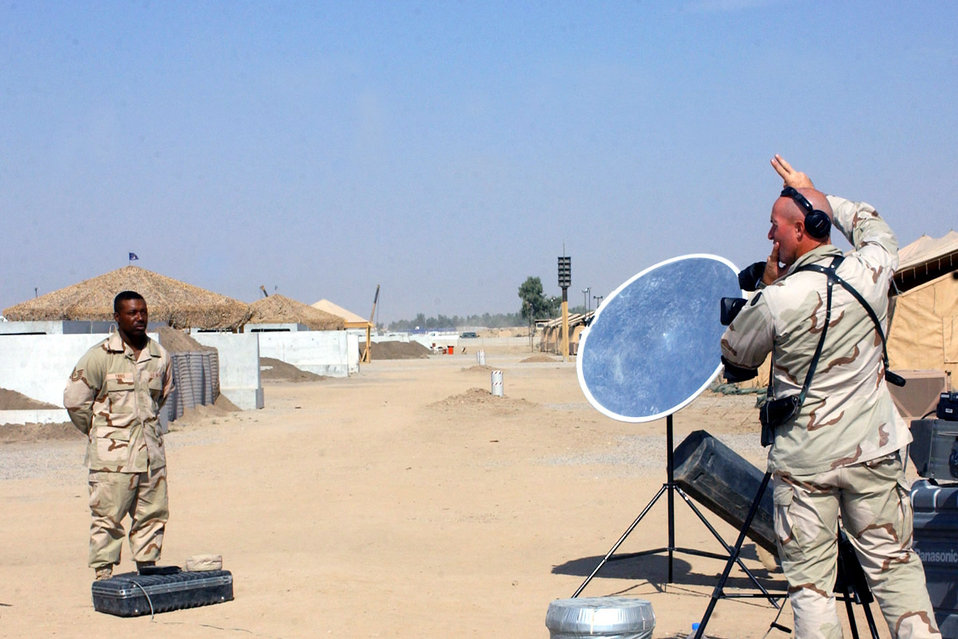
Three, two, one...

KIRKUK AIR BASE, Iraq -- Tech. Sgt. Emmett Tibbs (left) waits for his cue from Sgt. 1st Class Jamie Posten to begin taping a holiday greeting. The Army and Air Force holiday greetings team taped nearly 400 greetings here. Tibbs is assigned to the 506th Expeditionary Security Forces Squadron. Posten is assigned to the Army and Air Force Hometown News Service.